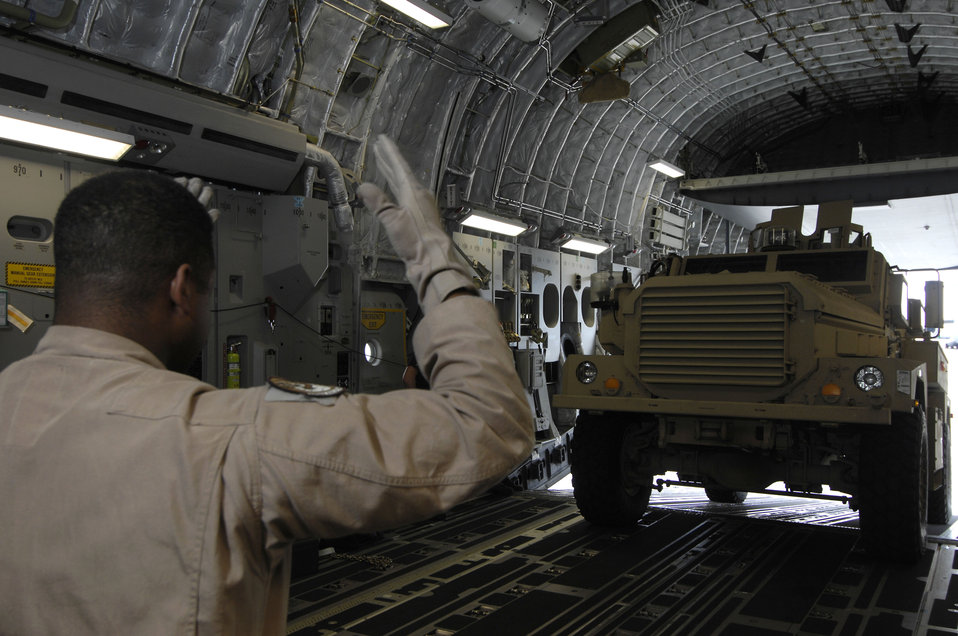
Hickam aircrew delivers vehicles to warfighters

Tech. Sgt. Andre Stollenwer guides a Marine-owned mine-resistant ambush-protected vehicle into a C-17 Globemaster III Dec. 29 at Kadena Air Base, Japan. Sergeant Stollenwer is a 535th Airlift Squadron loadmaster from Hickam Air Force Base, Hawaii. He is a native of Birmingham, Ala.